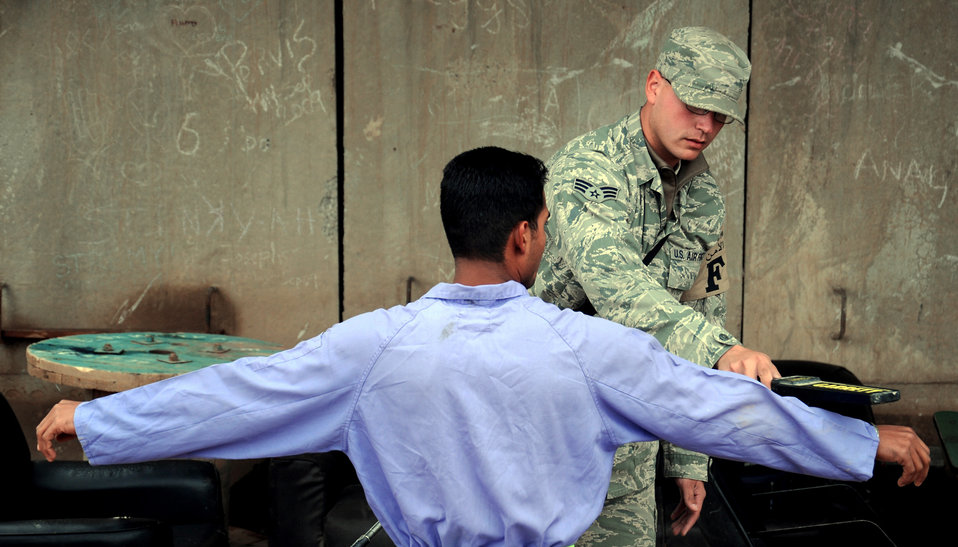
Force protection Airmen add another layer of armor in base defense

Senior Airman Ruben Lopez checks local nationals for weapons or prohibited items as they enter the gravel yard Nov. 19, 2009 at Joint Base Balad, Iraq. Airmen deployed as FP escorts protect resources while providing safety and security on Joint Base Balad. Airman Lopez is a 332nd Expeditionary Civil Engineer Squadron force protection escort.